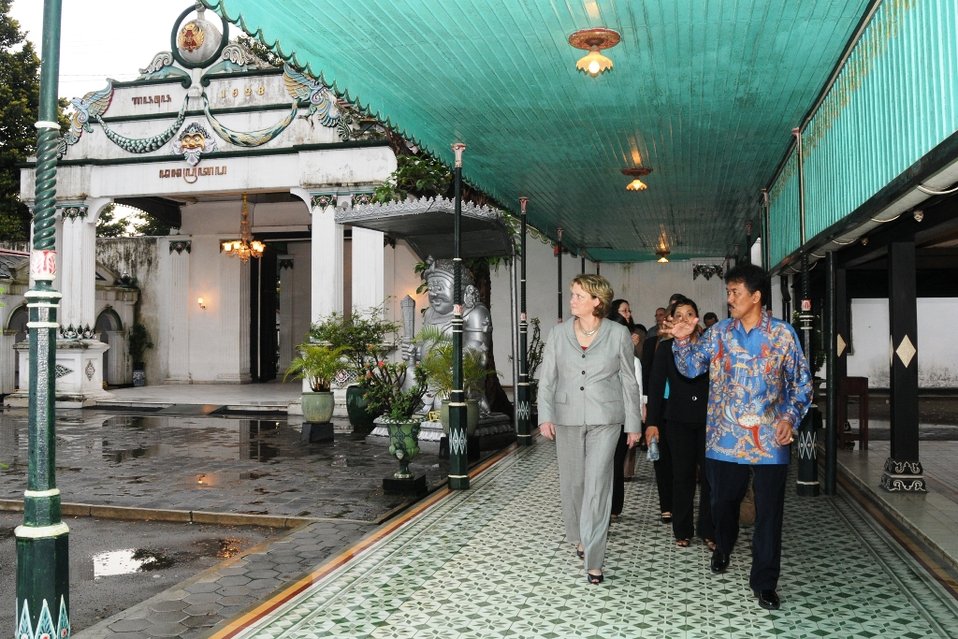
Under Secretary McHale Tours the Keraton With GBPH Prabukusumo

U.S. Undersecretary of State for Public Diplomacy and Public Affairs Judith A. McHale, left, is given a tour of the Keraton, the palace of the Yogyakarta Sultanate, by GBPH Prabukusumo, right, the brother of the Sultan of Yogyakarta, Indonesia, on December 4, 2010.